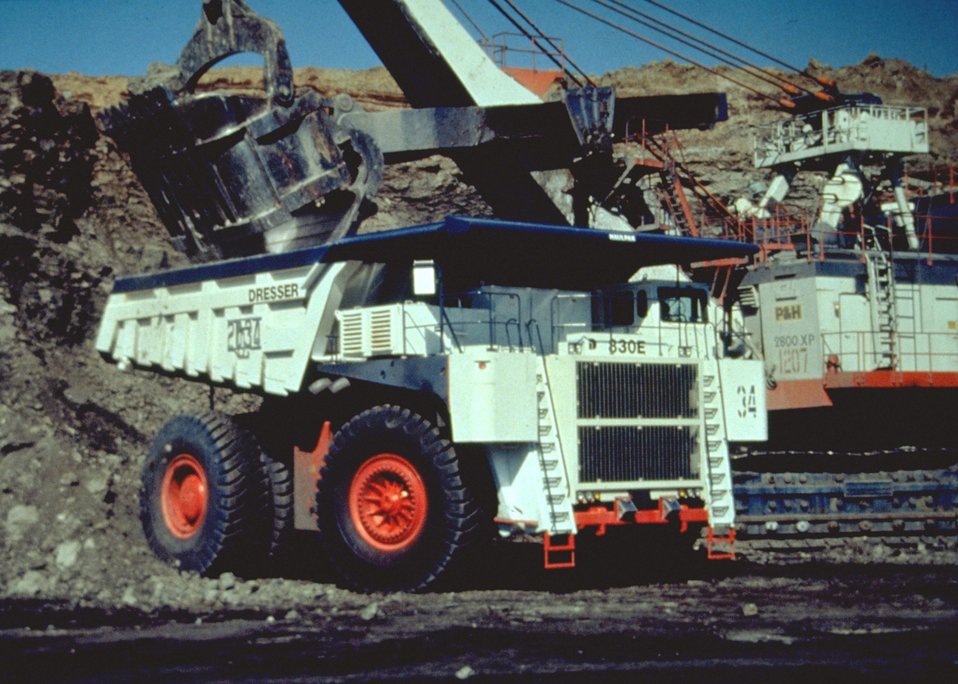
Haul pack truck.